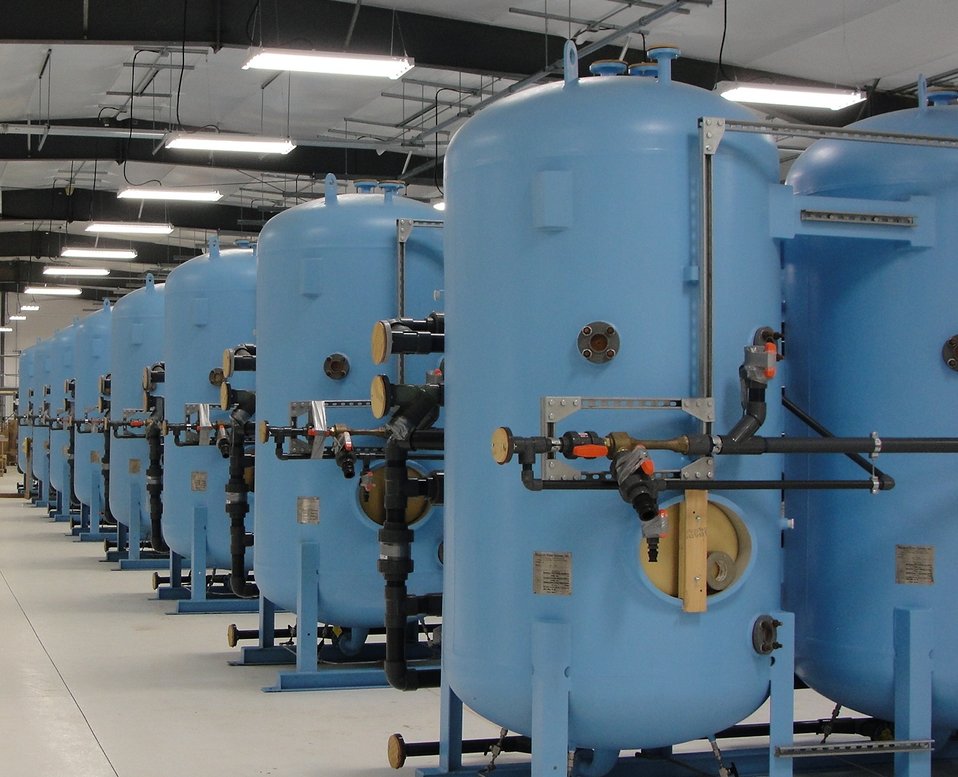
Hanford Treats Record Amount of Groundwater

These tanks contain resin used to help remove contaminants from groundwater.

American Recovery and Reinvestment Act work to expand Hanford’s capacity for treating contaminated
groundwater led to the 2011 record amount. The Recovery Act funded the installation of more
than 300 groundwater wells and construction of two groundwater treatment facilities. The 100-DX
system began operating in late 2010 and the 200 West system is scheduled to begin operating in
2012. Those Recovery Act investments will enable Hanford to treat millions of additional gallons of
groundwater in 2012 and subsequent years.